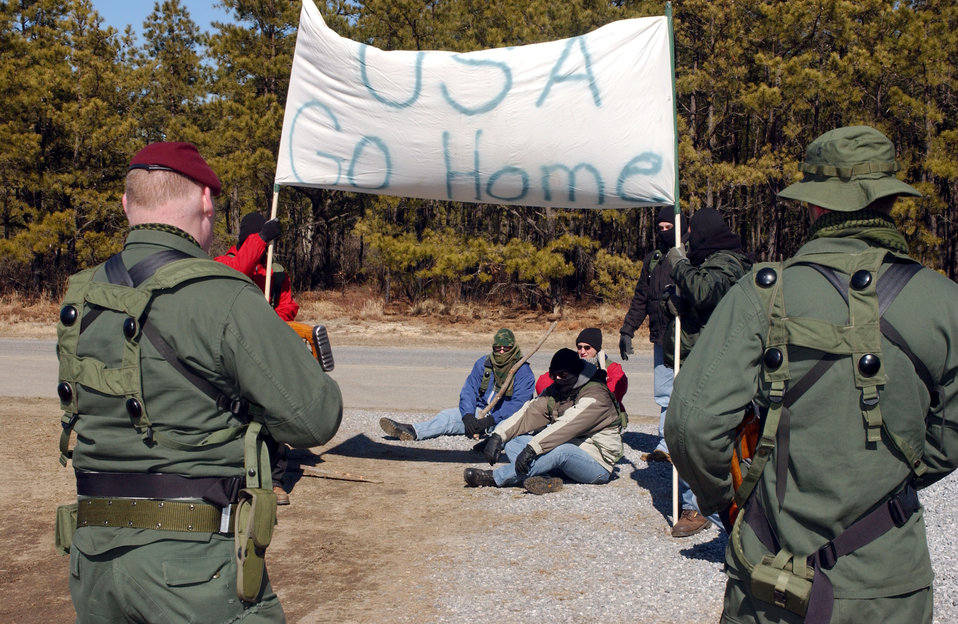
Get out

LAKEHURST NAVAL AIR STATION, N.J. -- Host nation local villagers conduct a peaceful Anti-American protest against Americans in their country outside the perimeter of tent city during exercise Eagle Flag on Feb. 25. Eagle Flag is a 12-day field training exercise involving more than 400 participants aligned with Air Expeditionary Force rotations to provide training for combat support forces.